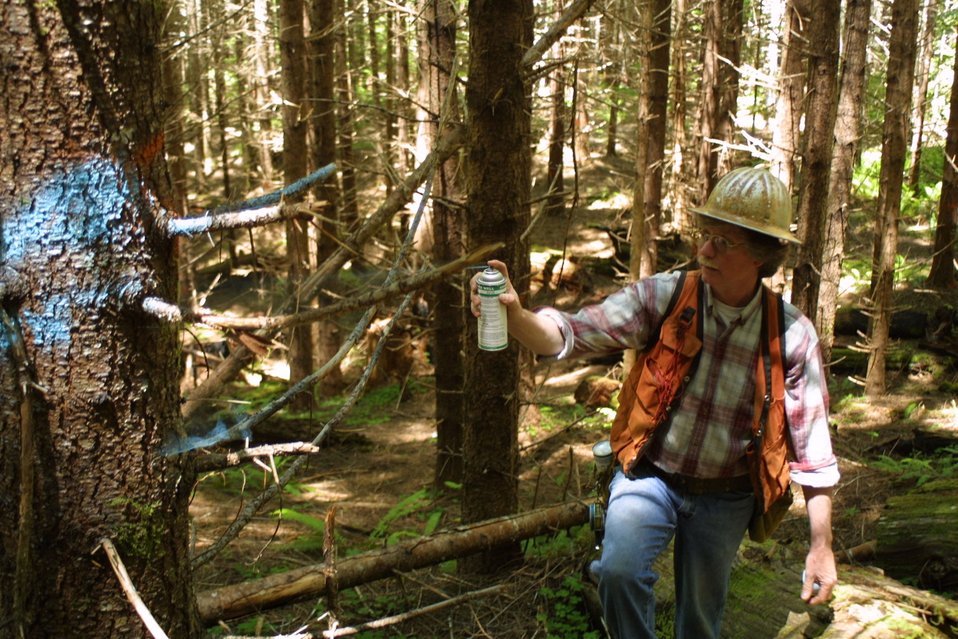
Camas East Timber Sale in Late Successional Reserve.